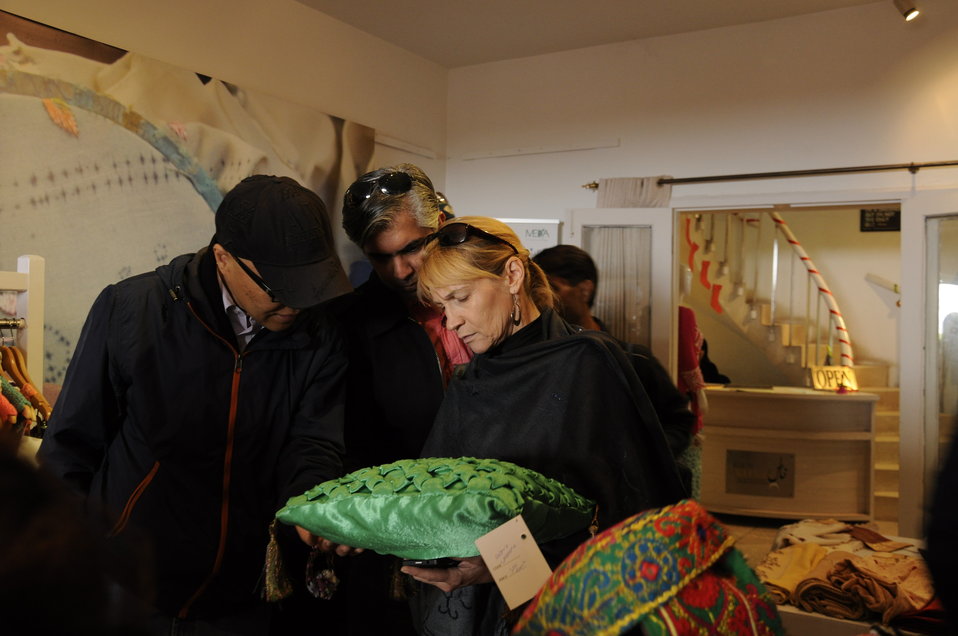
USAID's Entrepreneurs Project Team appriciating the quality of Hand Embellished Crafts